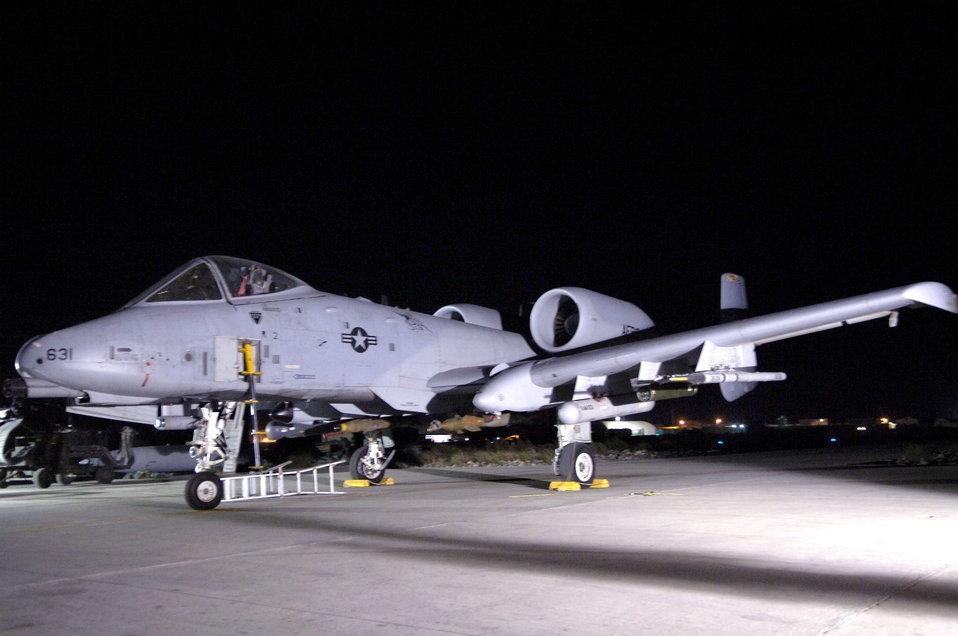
Airpower Summary for Sept. 25, 2007

An A-10 Thunderbolt II sits on a ramp Bagram Air Base, Afghanistan, waiting for its next mission. A-10s provide close-air support for coalition troops in Afghanistan and Iraq.